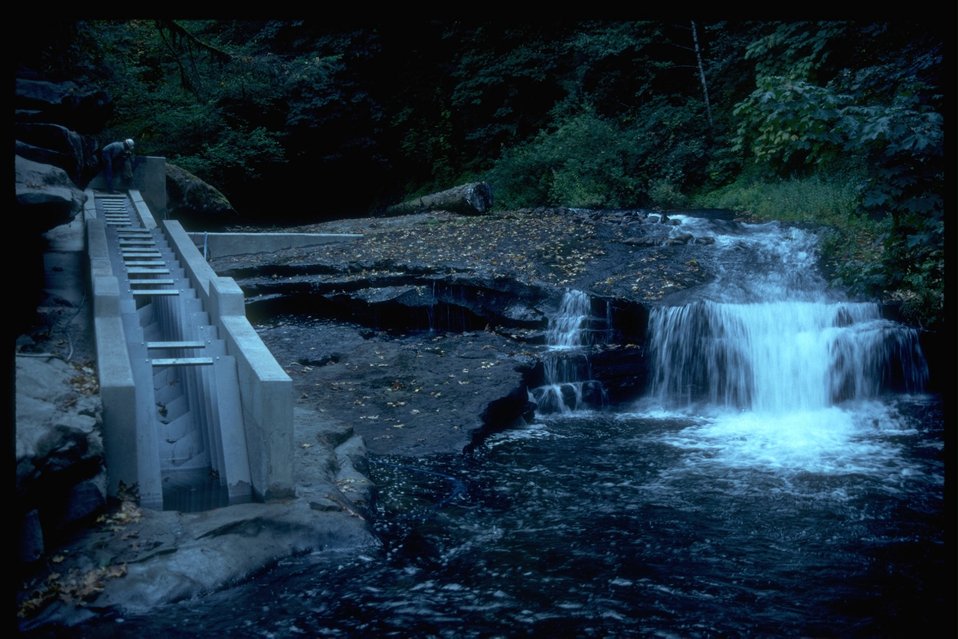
Fish ladder at Lake Creek